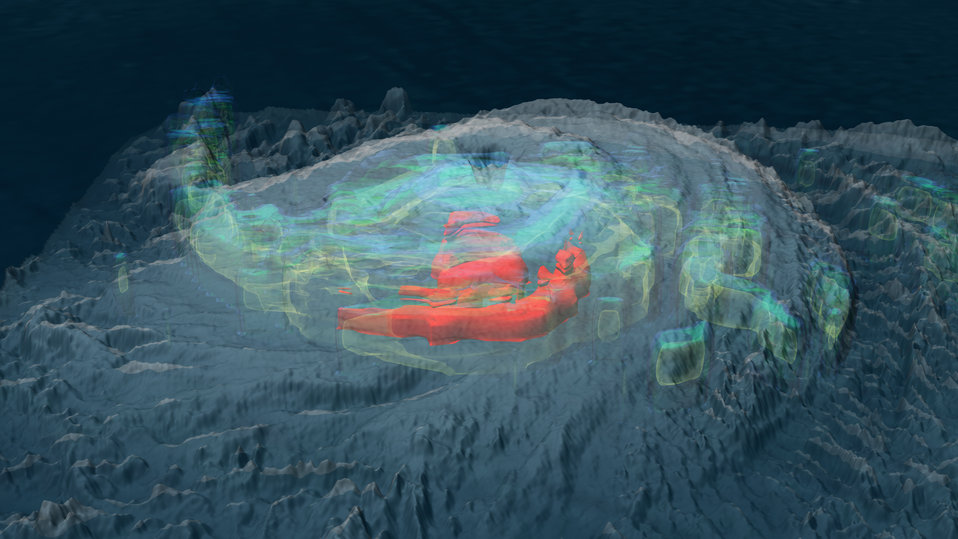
Hurricane Ike on September 4, 2008